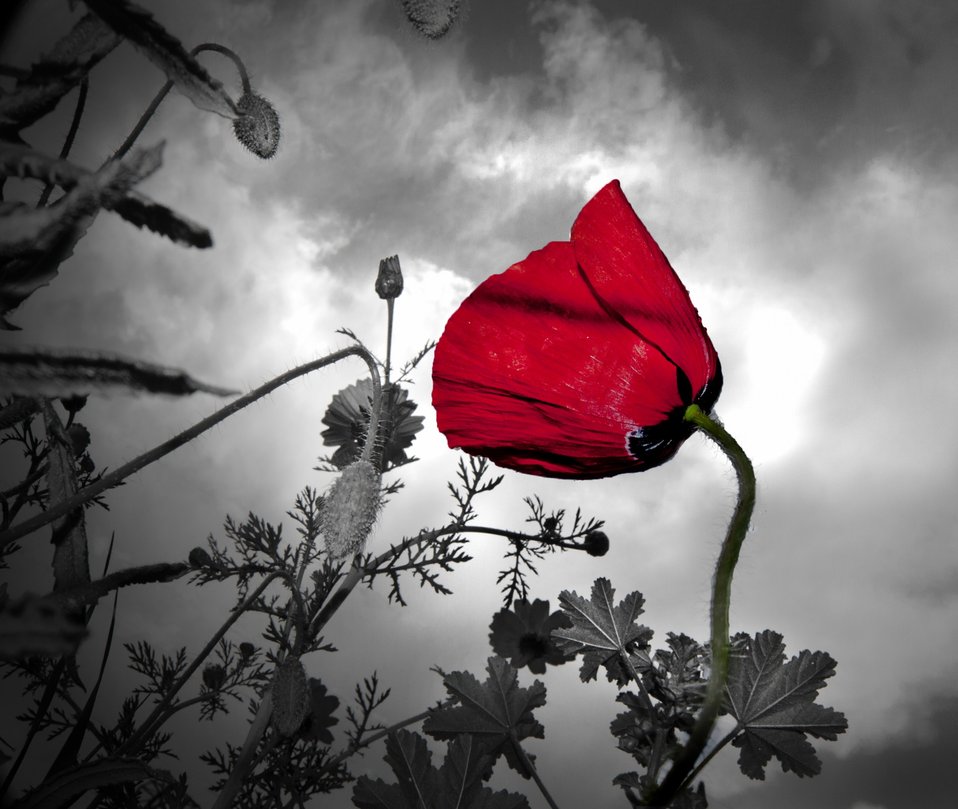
Poppy color.